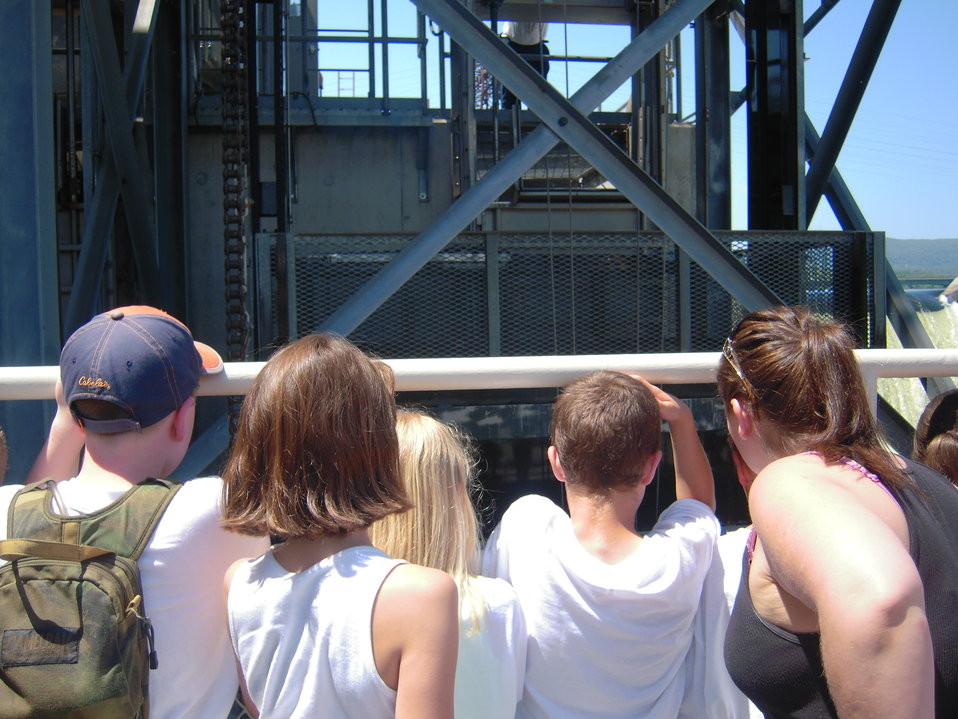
Fish lift rising